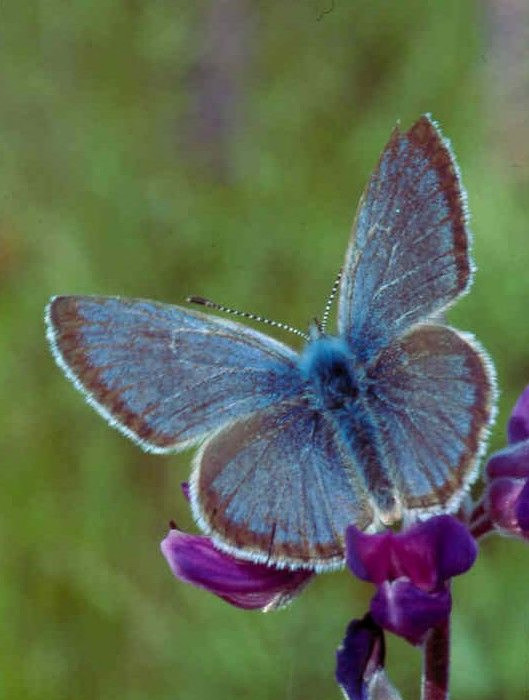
Fender's blue butterfly (endangered species)

Willamette Valley, OR